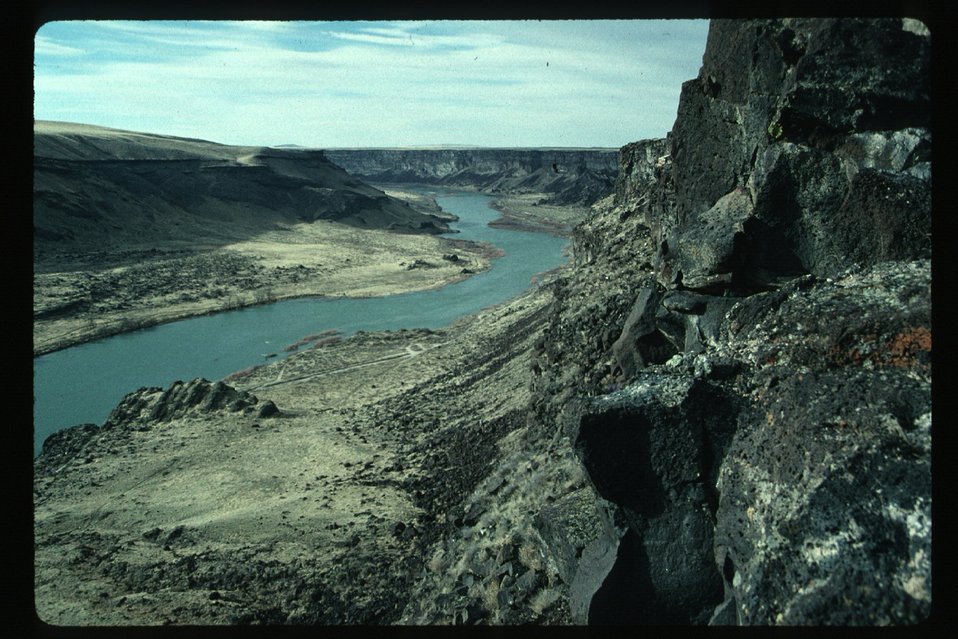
Snake River at Dedication Point Snake River Canyon Owyhee Field Office LSRD Lower Snake River District